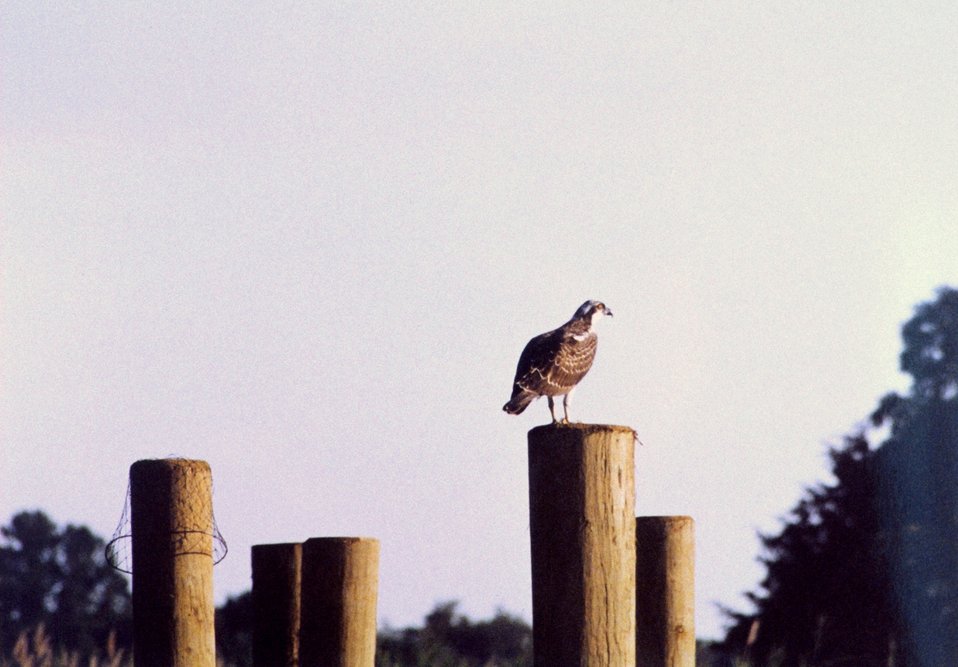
Osprey on pier piling.